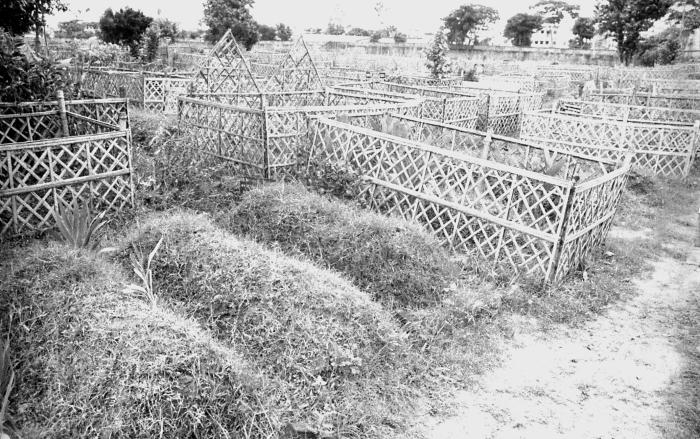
This image was part of a series provided by Dr. Stan Foster, and captured by Pierre Claquin, M.D., B.A.C., who at the time was a member of the World Health Organization's Smallpox Eradication Program. It was part of a series photographed by former E.I.S. officer, Stanley O. Foster M.D., M.P.H., and was one of a series entitled 'The Story of One Smallpox Jeep', which depicted the travails faced by the jeep, and its occupants of public health practitioners, as they road through the Bangladesh countryside in an attempt to eradicate smallpox from the country. This was a village cemetery, in which local residents had been buried.